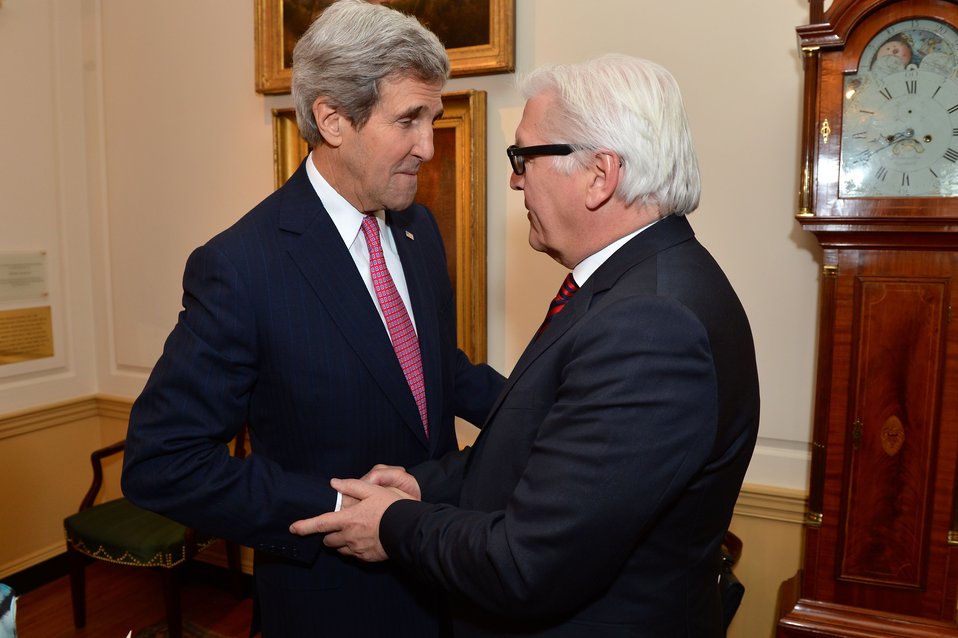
Secretary Kerry Greets German Foreign Minister Steinmeier

U.S. Secretary of State John Kerry Kerry greets German Foreign Minister Frank-Walter Steinmeier before their working lunch at the U.S. Department of State in Washington, D.C., on February 27, 2014.